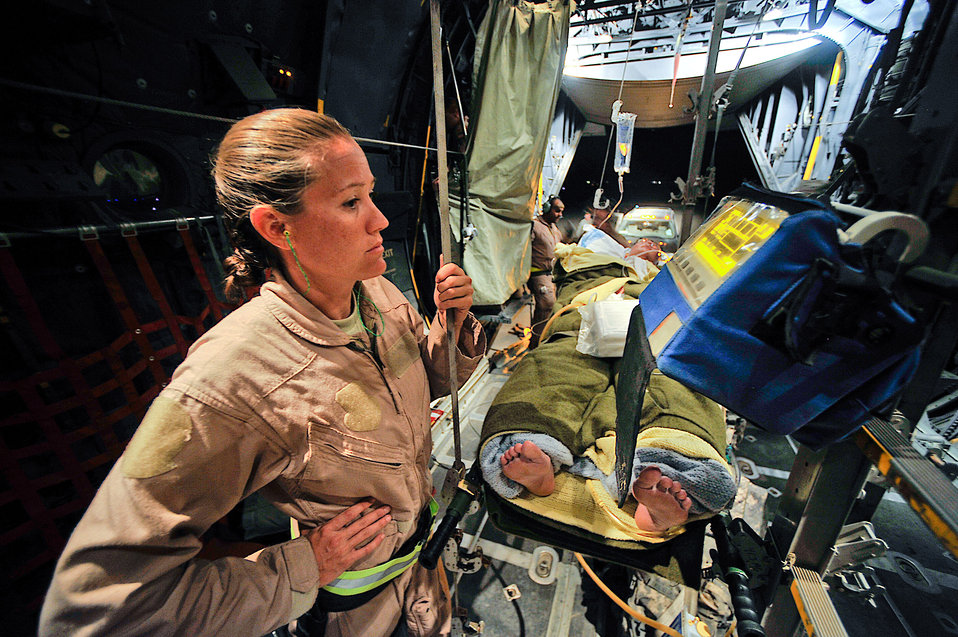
Careful monitoring...

Tech. Sgt. Kristy Wellman checks a patient's vital signs before take off at a base in Southwest Asia during a bandage mission Sept. 23. She is a charge medical technician with the 332nd Expeditionary Operations Support Squadron at Joint Base Balad, Iraq.